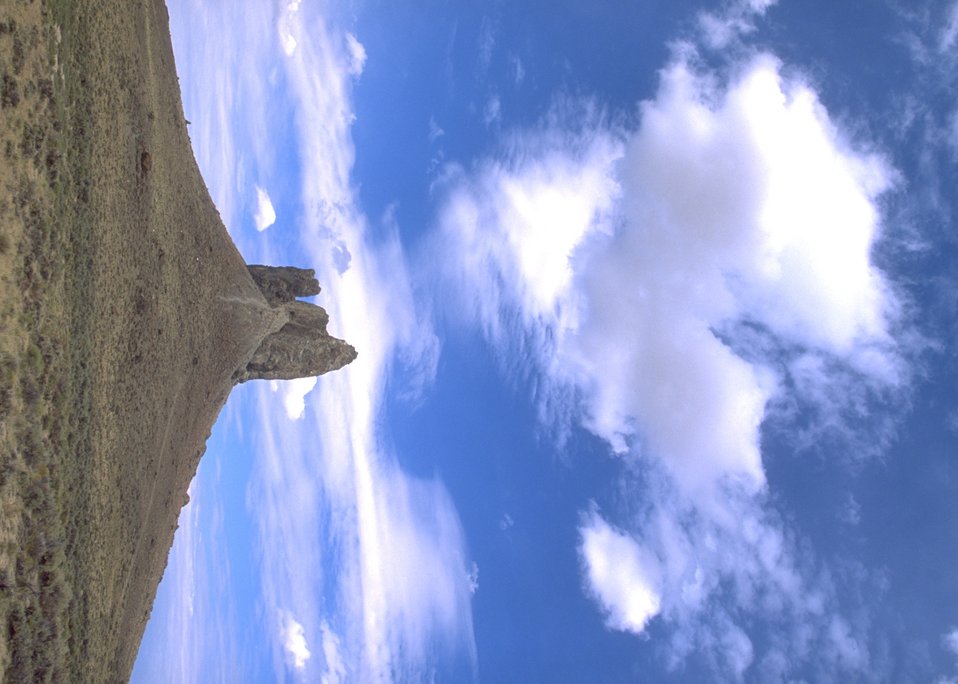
Boar's Tusk, Rock Springs Field Office.